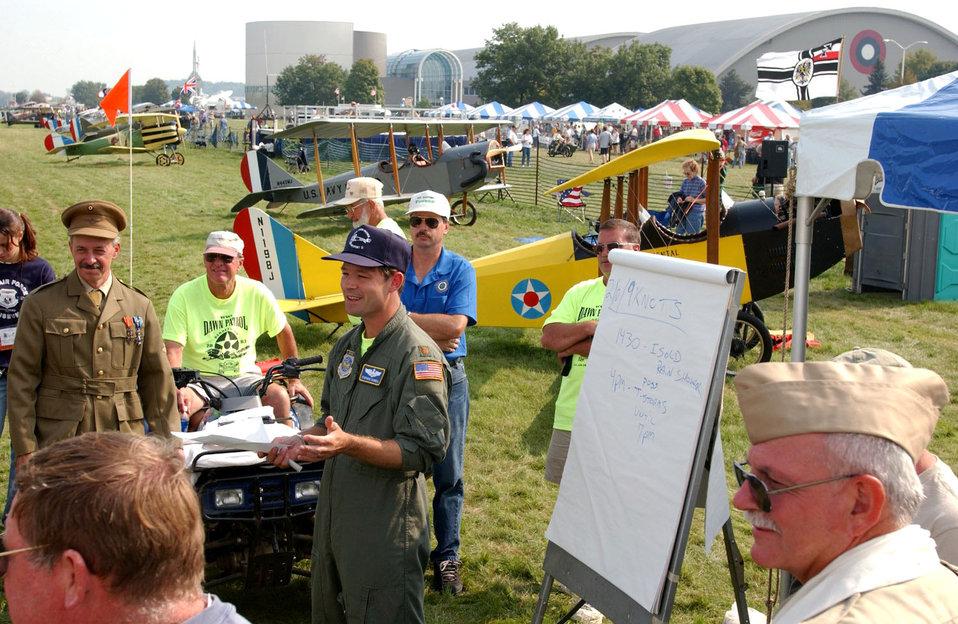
World War I Fly-In

WRIGHT-PATTERSON AFB, Ohio -- Maj. Steve Schnell gives the morning safety briefing to pilots and other staff at the fourth Dawn Patrol Rendezvous World War I Fly-In. The event was held at the U.S. Air Force Museum here Sept. 12 to 14. More than 53,000 people visited the museum and the event. Schnell served as the flight operations and safety officer.